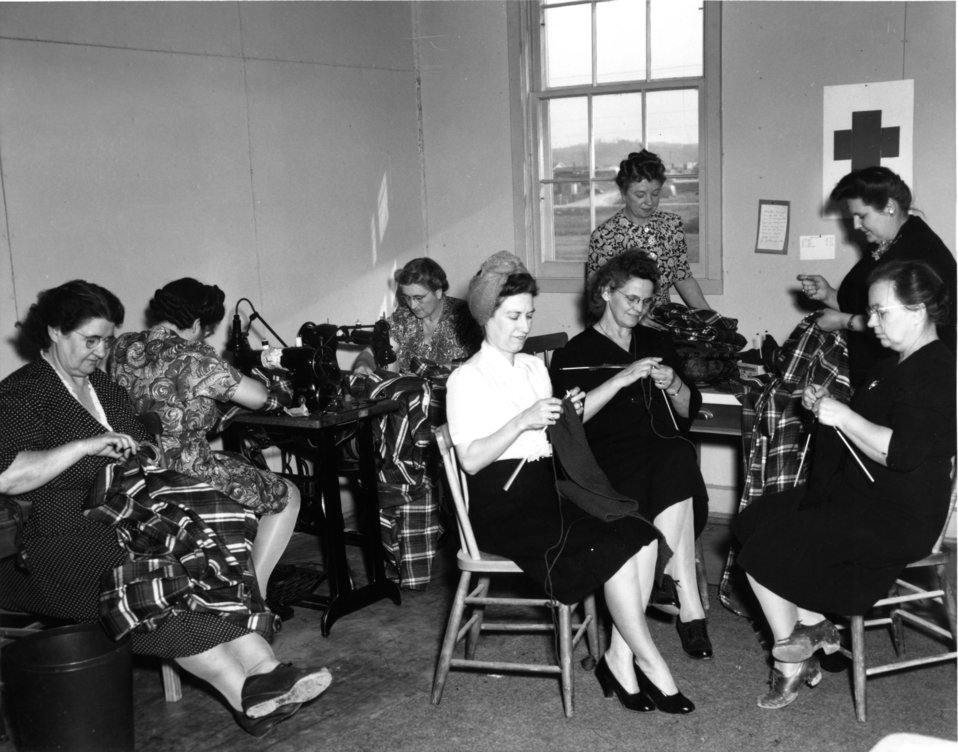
Medical at Oak Ridge